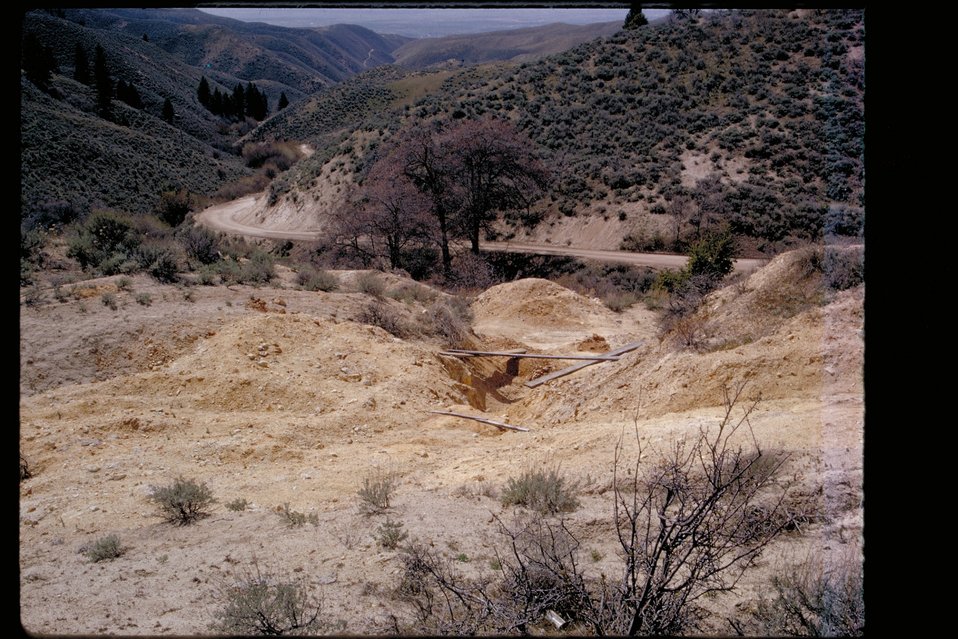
Glory Hole Boise Front AML Abandoned Mine Lands Four Rivers Field Office LSRD Lower Snake River District